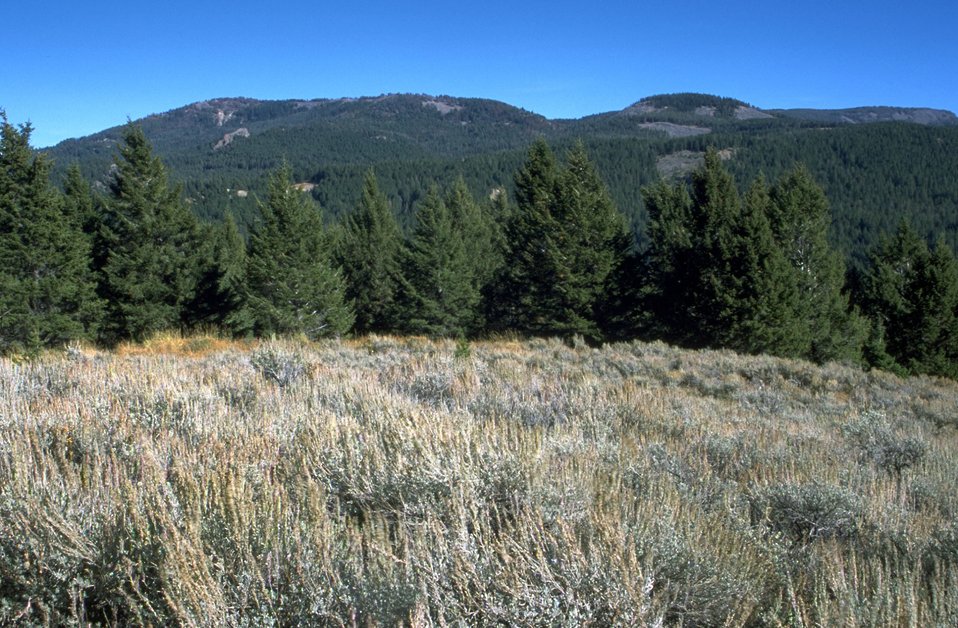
Sage Brush area with forest and mountains in the background